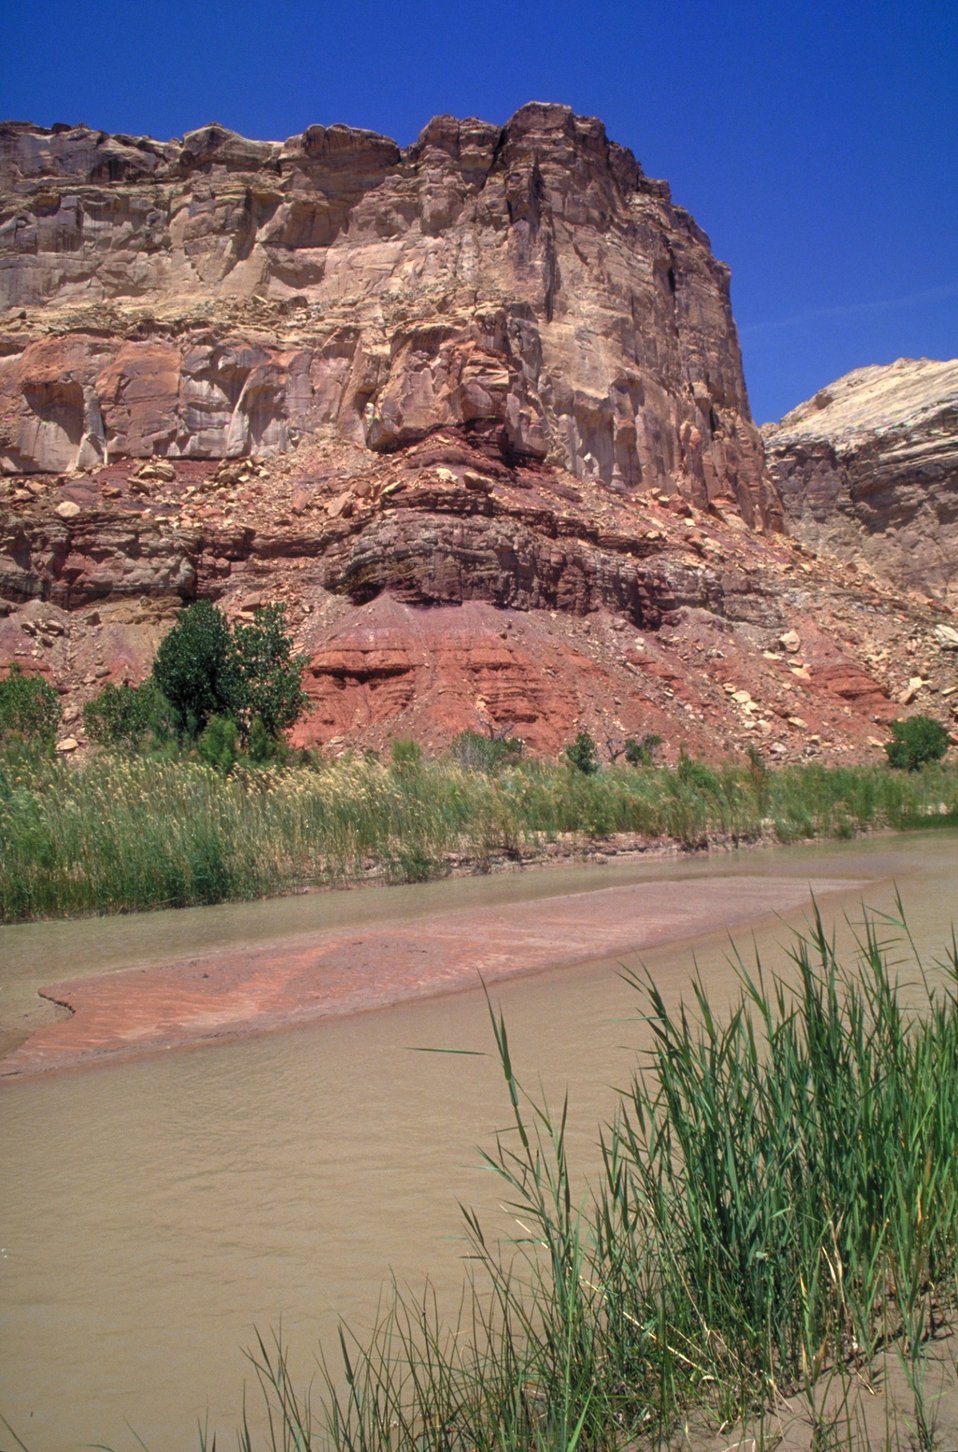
Upper Muddy Creek along the Red Canyon Loop, San Rafael Swell.